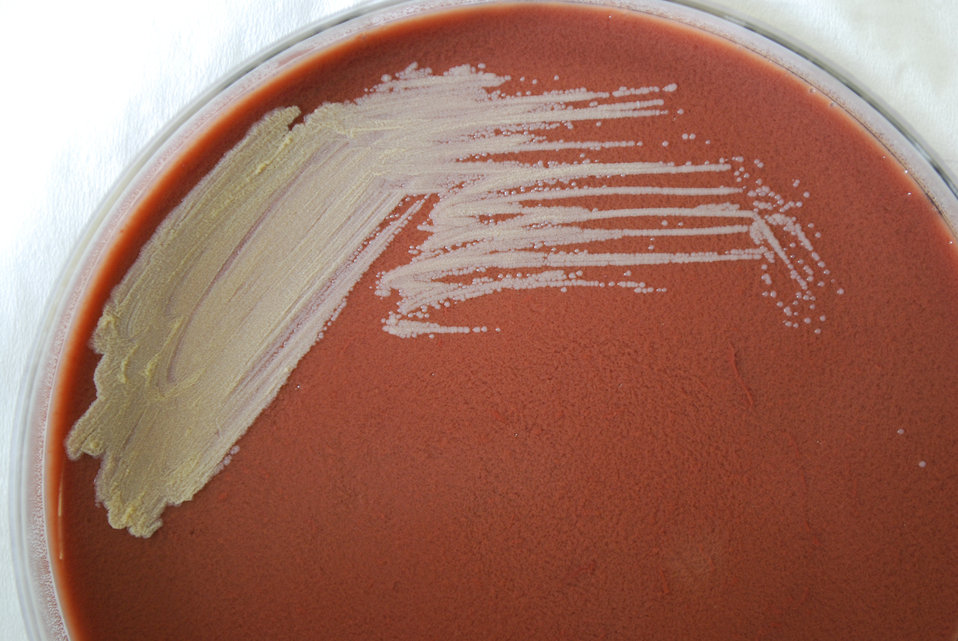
A closer view of PHIL 12216, this photograph depicts the colonial morphology displayed by Gram-negative Francisella tularensis bacteria, which is the pathogen responsible for causing the disease tularemia. These bacteria were grown on a medium of cysteine heart infusion agar (CHAB), for a 48 hour time period, at a temperature of 37�C.